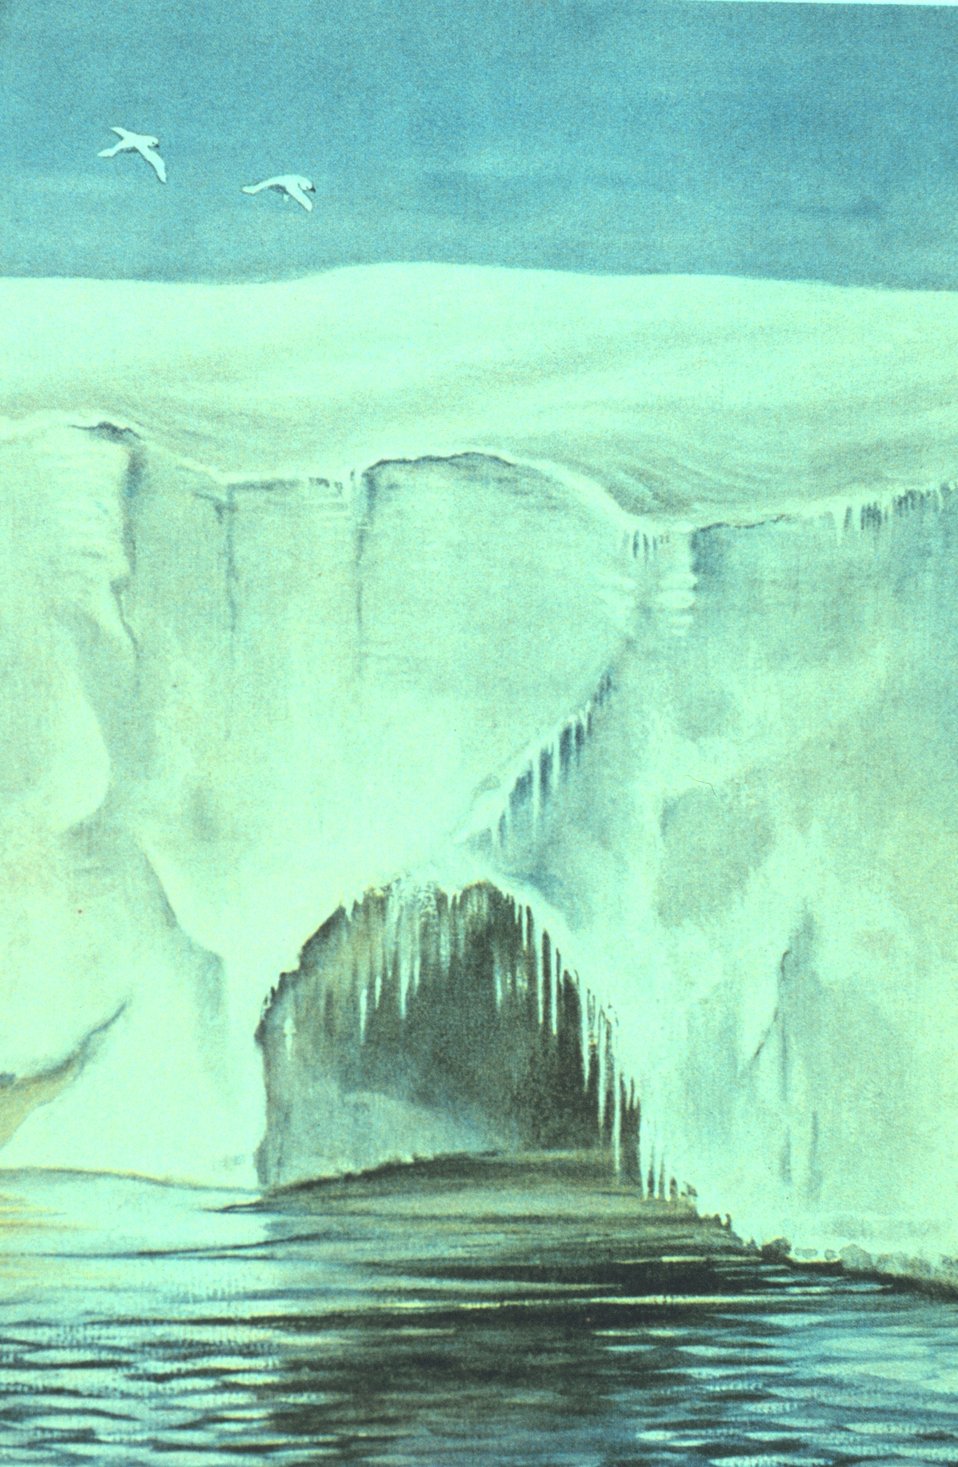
Cave in the barrier, Cape Crozier, Jan. 4th, 1911. In: 'Scott's Last Expedition', 1913. Dodd, Mead, and Company, New York. P. 24. Vol. II. Library Call Number G850 1910 .S35 1913.